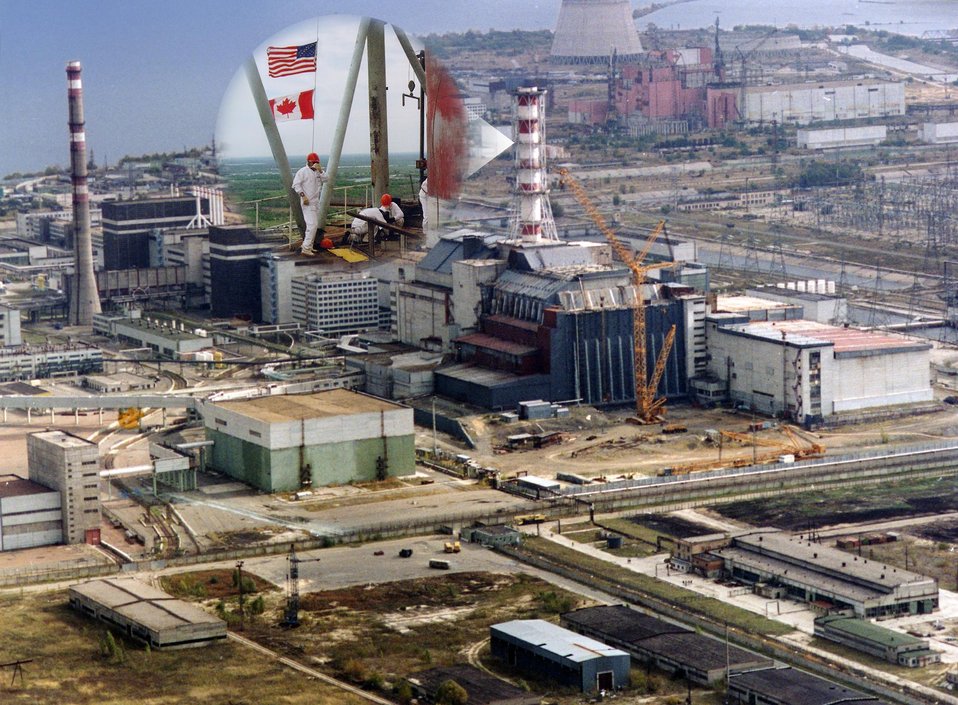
In 1998, Chernobyl Nuclear Power Plant staff and Ukranian contractor replaced bracing on the 210-foot ventilation stack between Units 3 and 4, which suffered serious structural damage during the 1986 accident.

International cooperation and assistance has characterized the Chernobyl Shelter Stabilization and safety projects, with the United States and Canada sponsoring the ventilation stack project and the Ukraine providing labor.